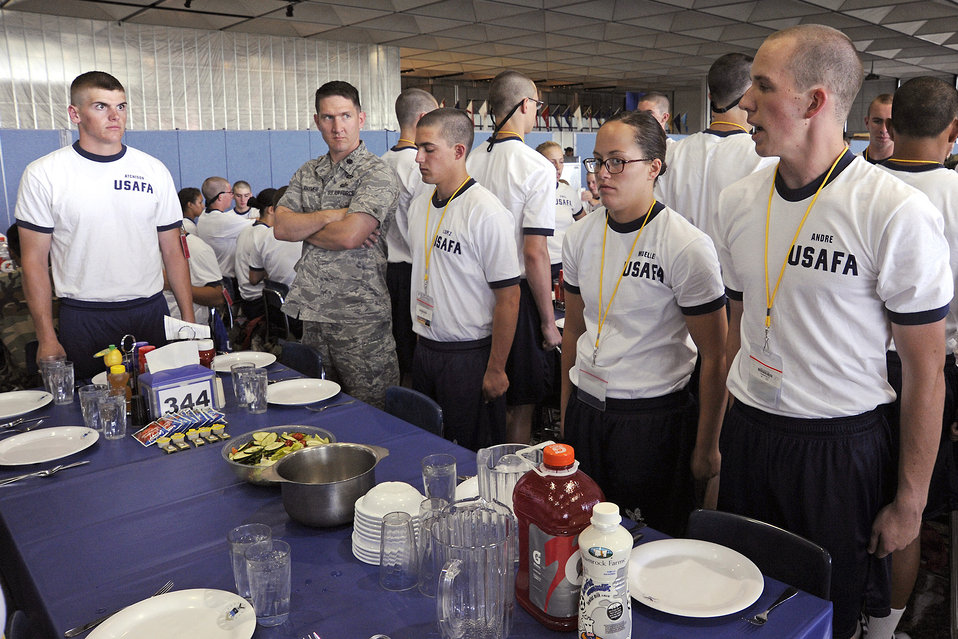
New Academy cadets learn dining 'traditions'

Cadet 1st Class Eric Atchison receives a response from basic cadet Brian Andre during the Class of 2014's first day of basic cadet training at the U.S. Air Force Academy, Colo., June 25, 2010. The day also included an introduction to the physical training regimen.